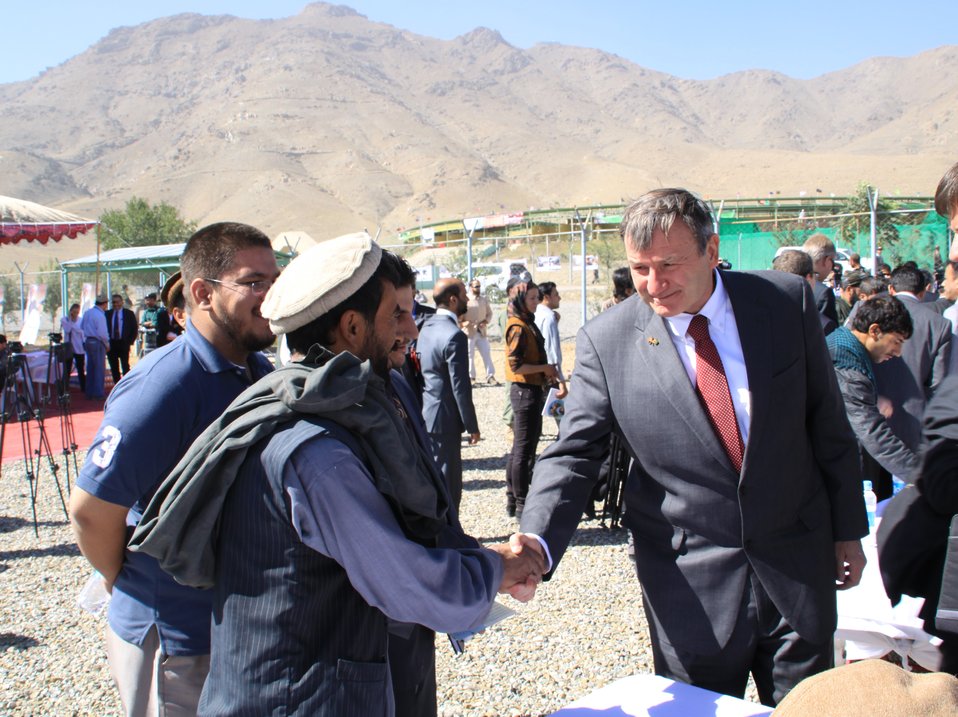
Afghan Farmers Break Ground, Sow Seeds in AVIPA's 2010 Wheat Seed Distribution Launch